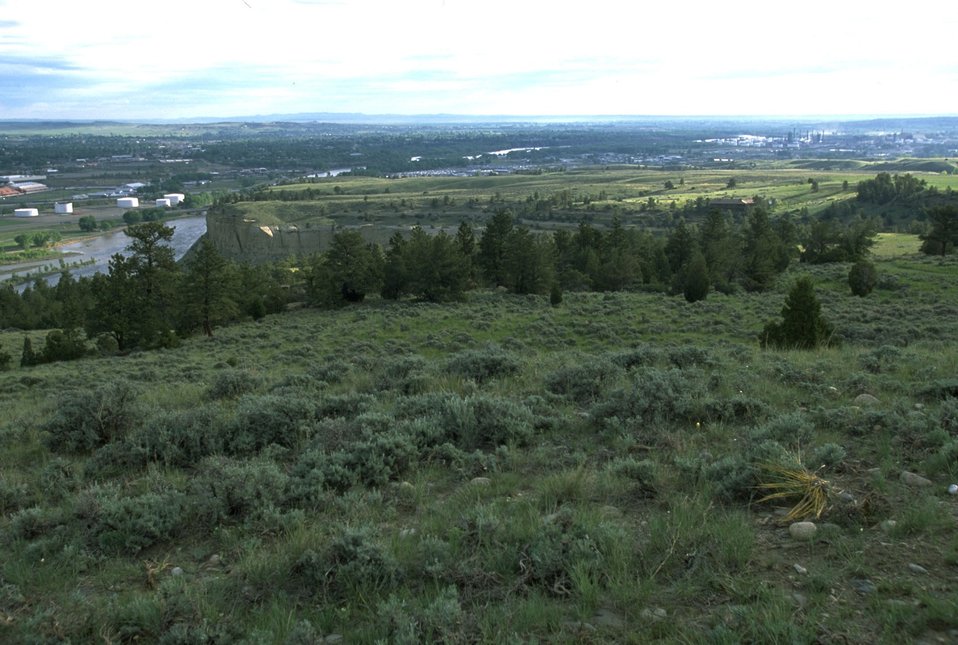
Looking north from the Four Dances Natural Area - Yellowstone River and parts of Billing MT in the background